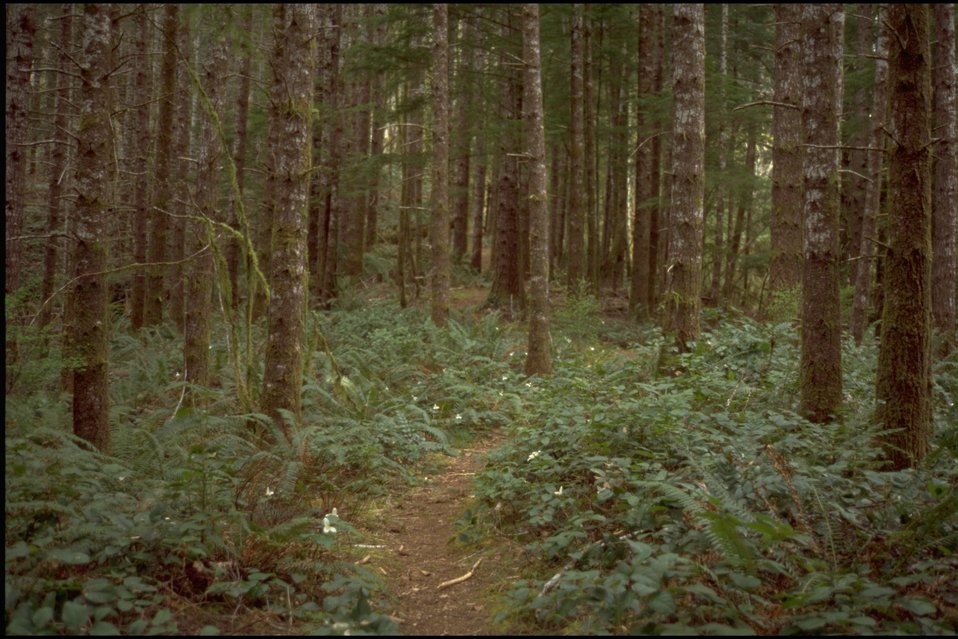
Old growth trail.